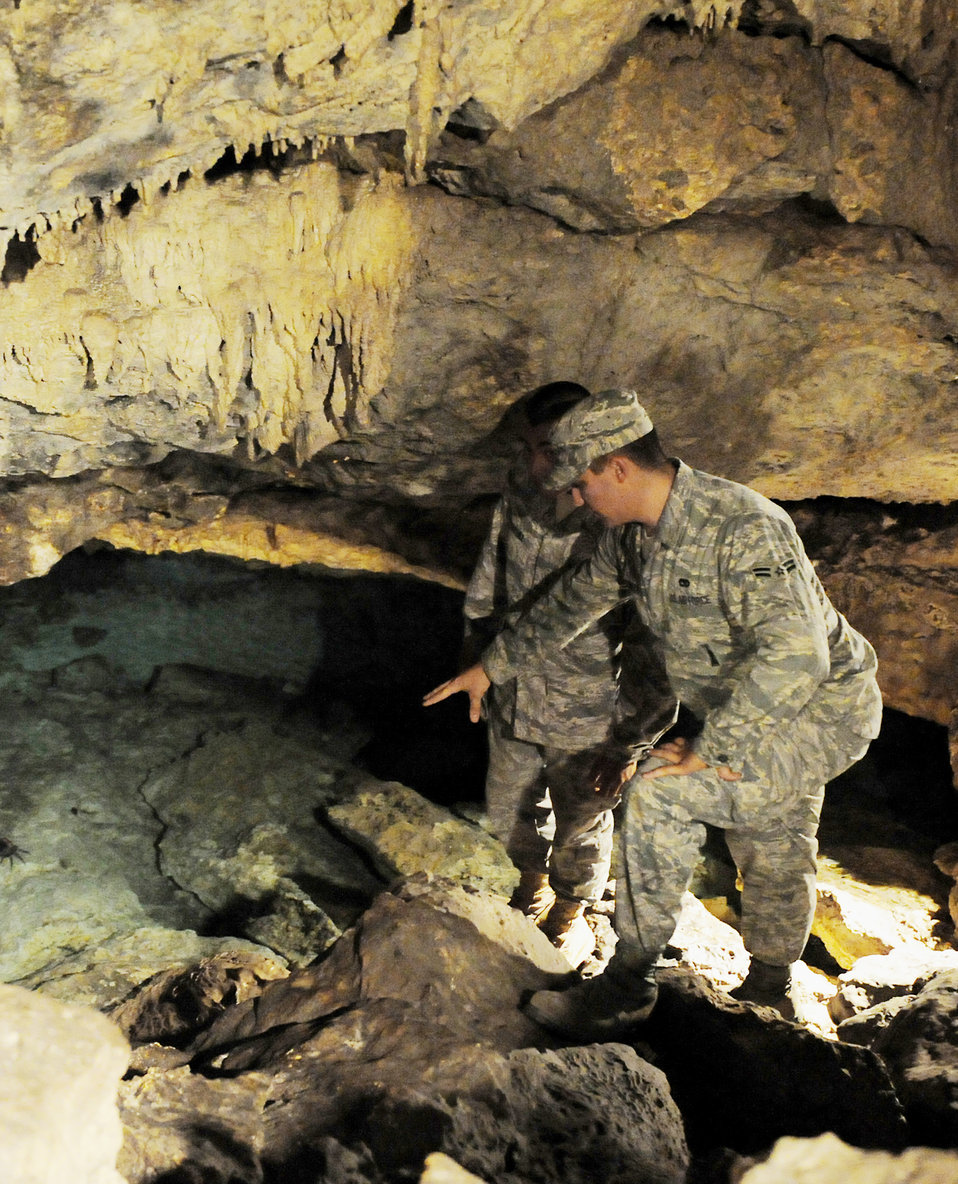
Underwater cave save

Airman 1st Class Kylle Krzywiecki shows the underwater cave he dove into to rescue a drowning man March 27, 2010, near Andersen Air Force Base, Guam. Airman Krzywiecki, along with others from the 36th Munitions Squadron, performed CPR and ran more than a mile through jungle and beach terrain to contact emergency services.